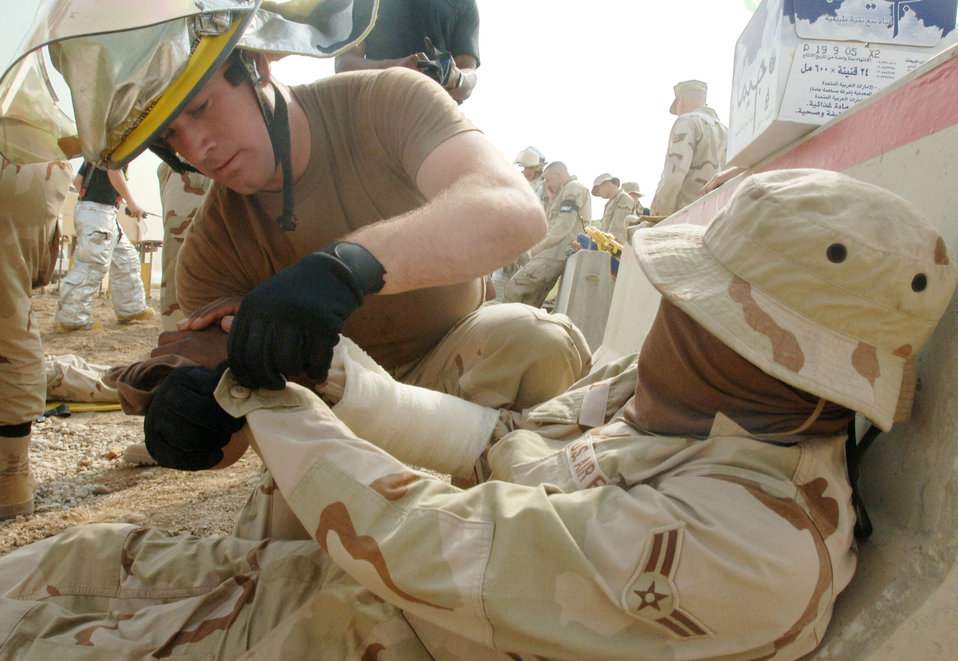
Operation Iraqi Freedom

ALI BASE, Iraq -- Firefighter Airman 1st Class Robert Nicks provides care to an